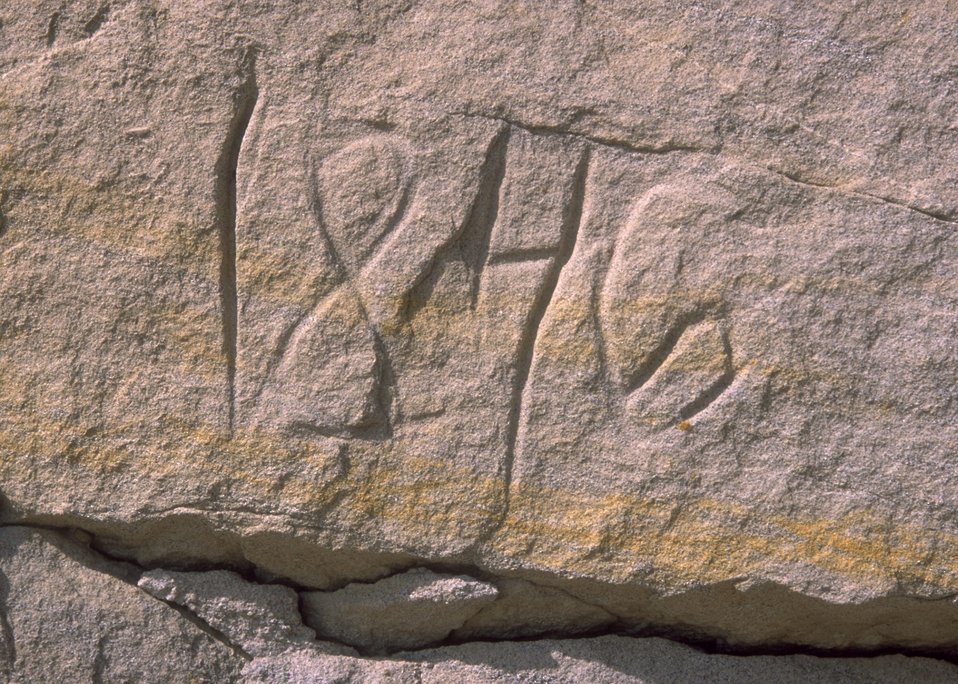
Date carved into rock by pioneers at Rock Avenue, Oregon Trail, Casper Field Office